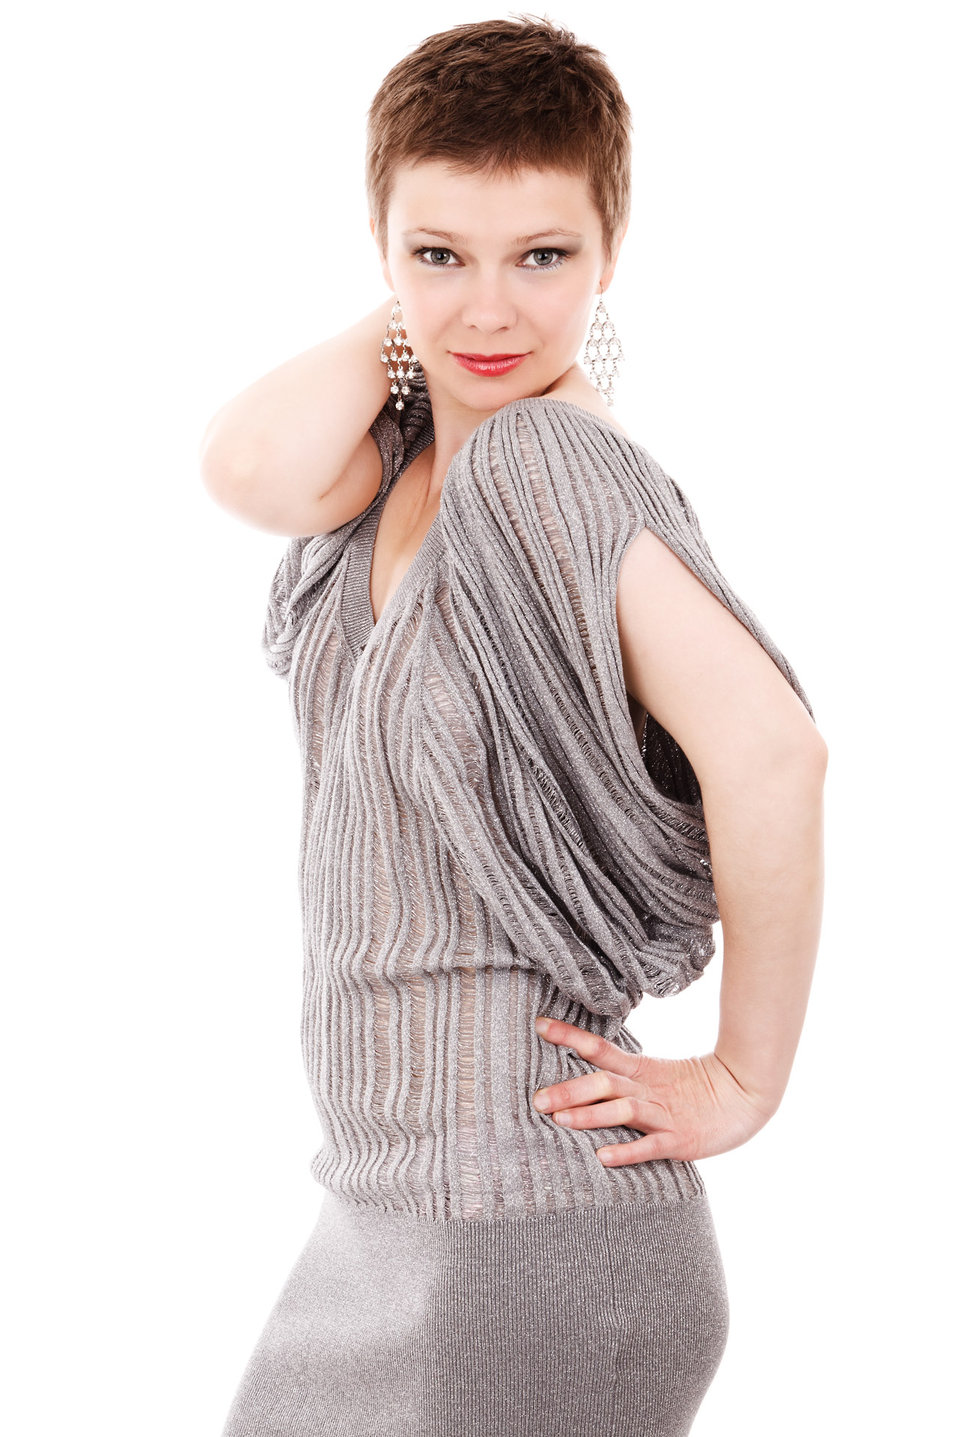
Fashion model poses

Young fashion model is posing isolated on white background..